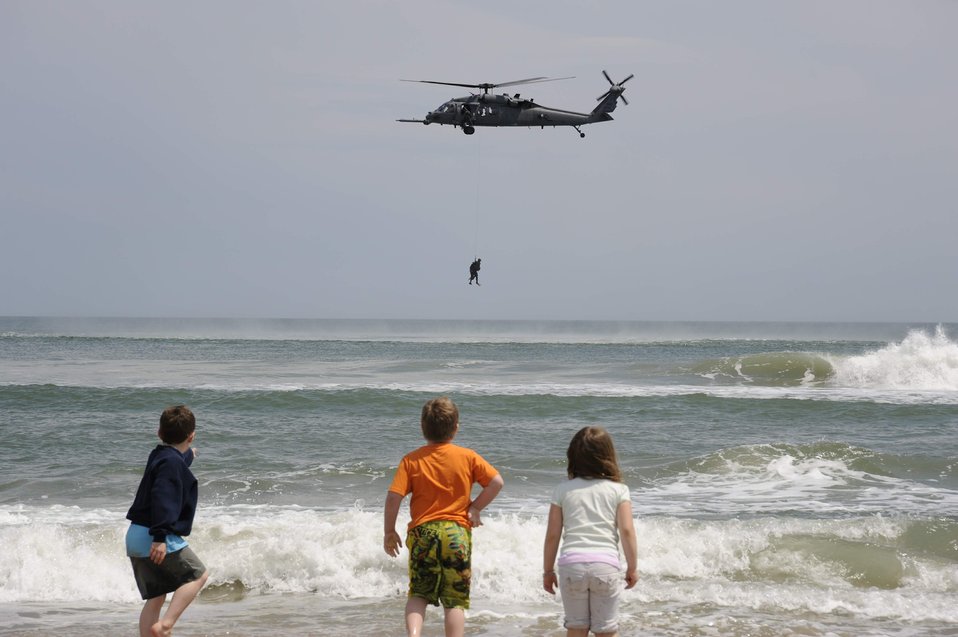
Hampton Roads Air Force Week

Michael Harris (left), Tyler Simmons and Elise Harris watch as a special forces team member gets reeled into an HH-60 Pave Hawk helicopter during a joint airpower demonstration as part of Air Force Week April 22 along the coastline of Virginia Beach, Va.